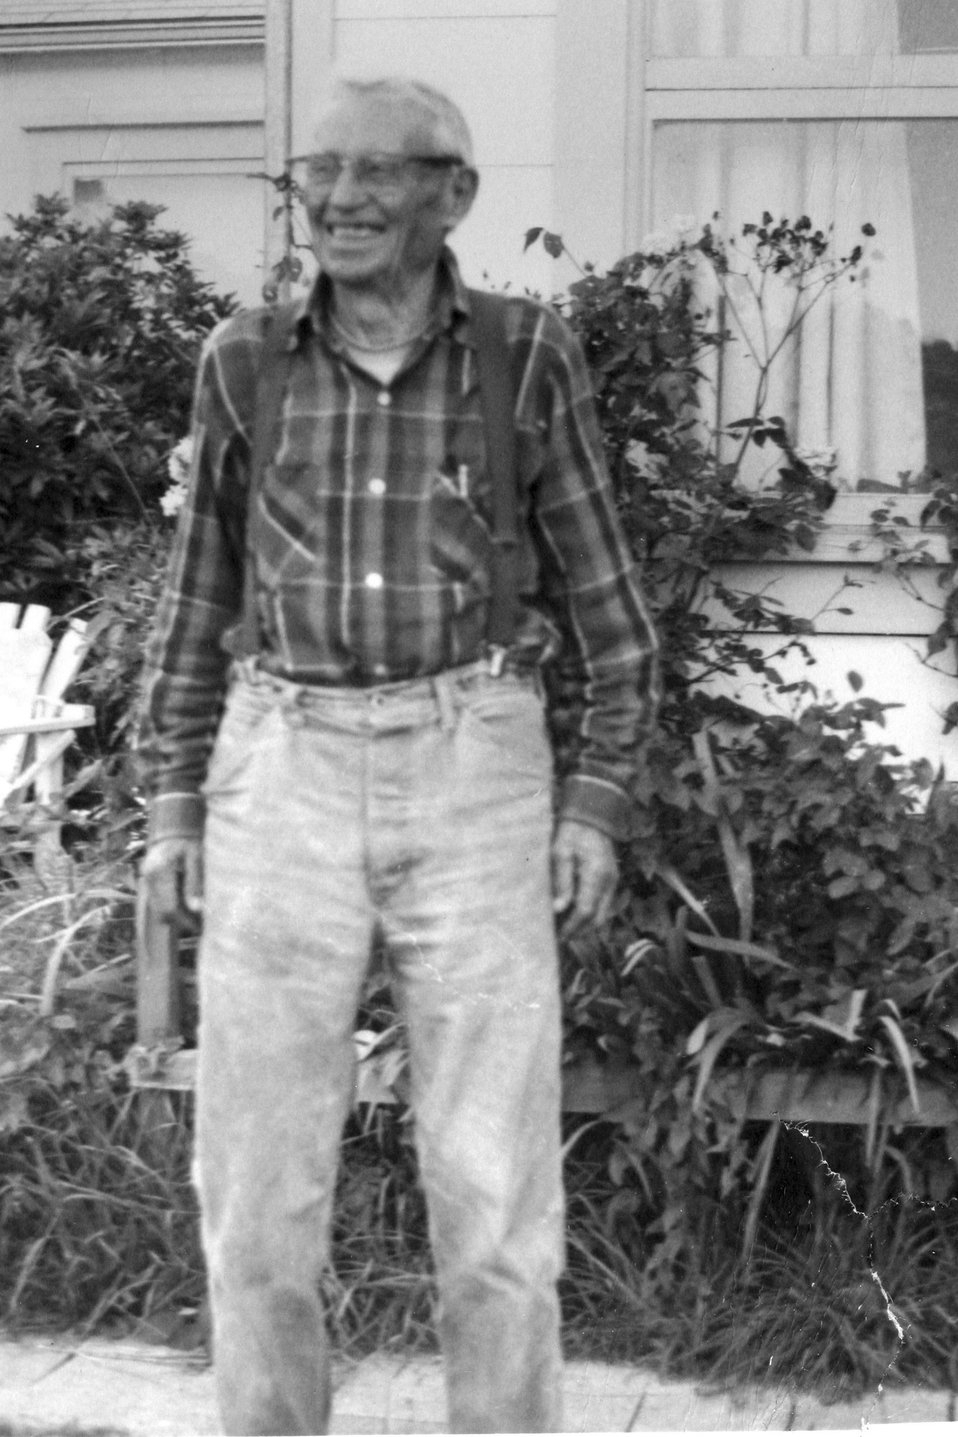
Leo Frye